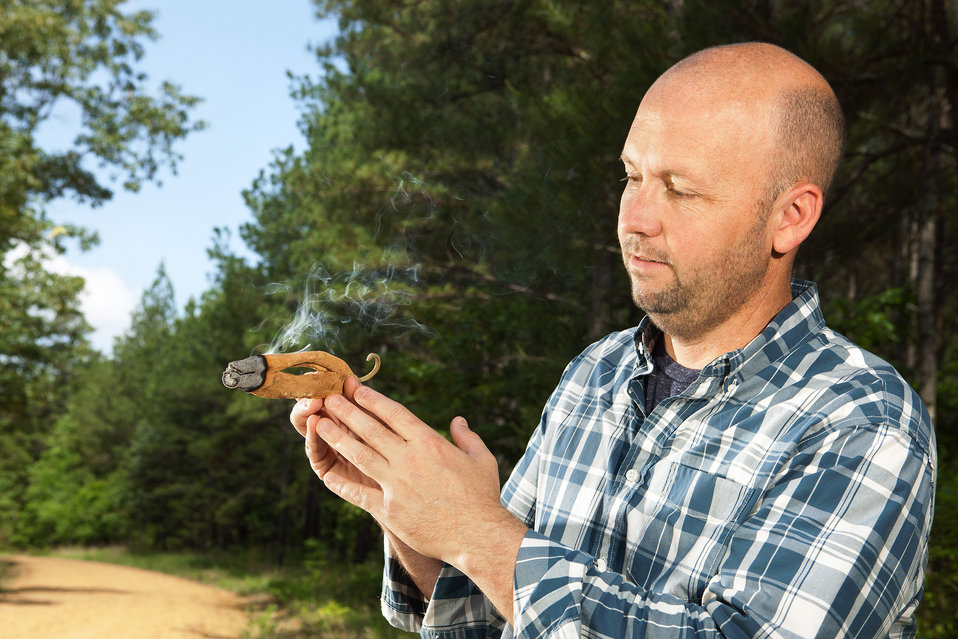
U.S. Department of Agriculture (USDA) Agriculture Research Service (ARS) chemist Charles Cantrell examines a burning dried male inflorescence from the breadfruit tree (Artocarpus altilis) on Sept. 19, 2003. People in Oceania routinely burned this plant to repel biting insects such as mosquitoes.